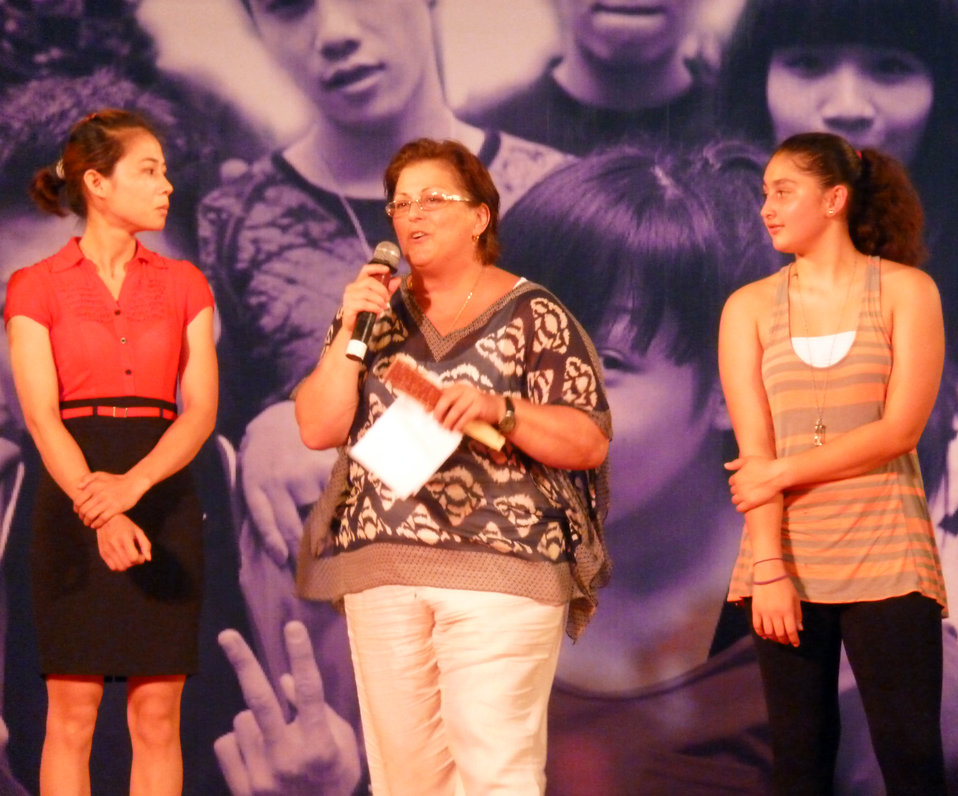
U.S. Deputy Chief of Mission Claire Pierangelo raps on state to the hip hop against HIV/AIDS beat.

PEPFAR Sponsors Hip Hop to Stop the Spread of HIV